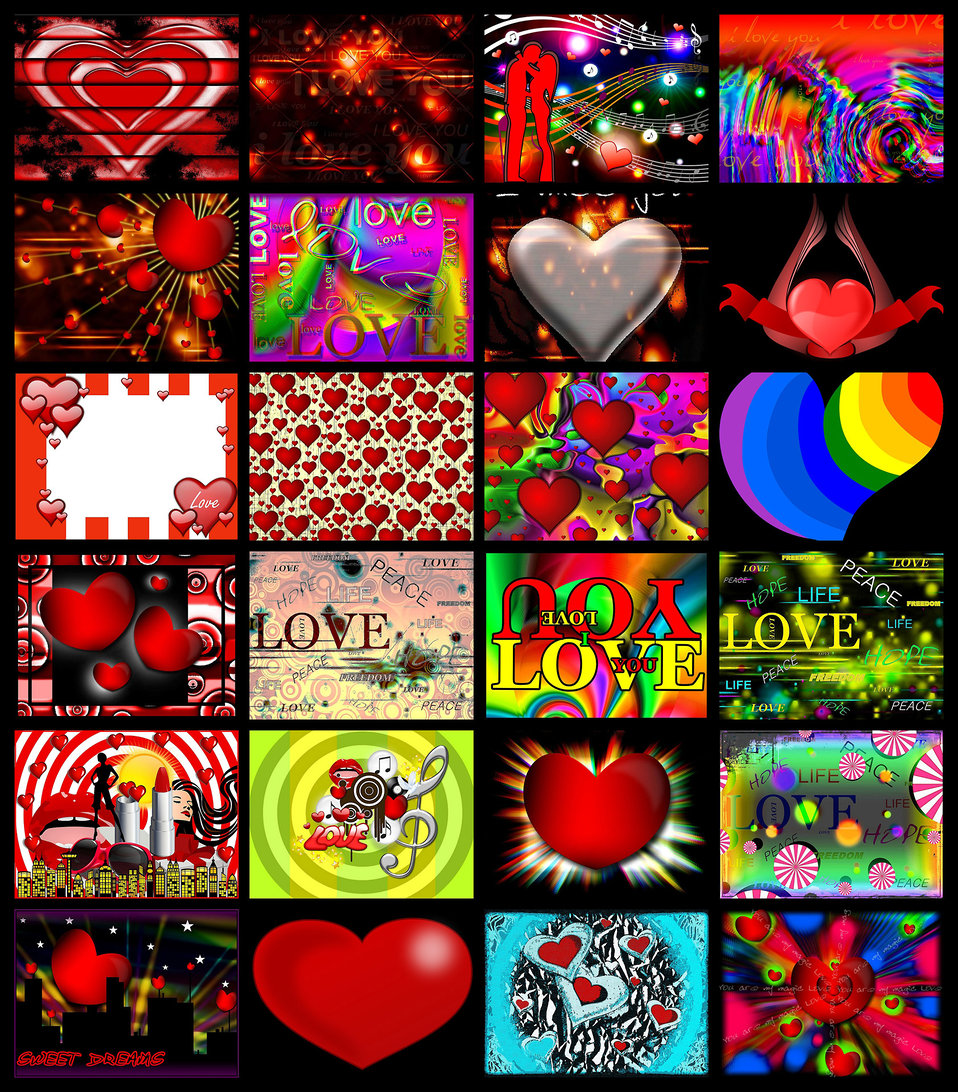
Lots of love

Background.